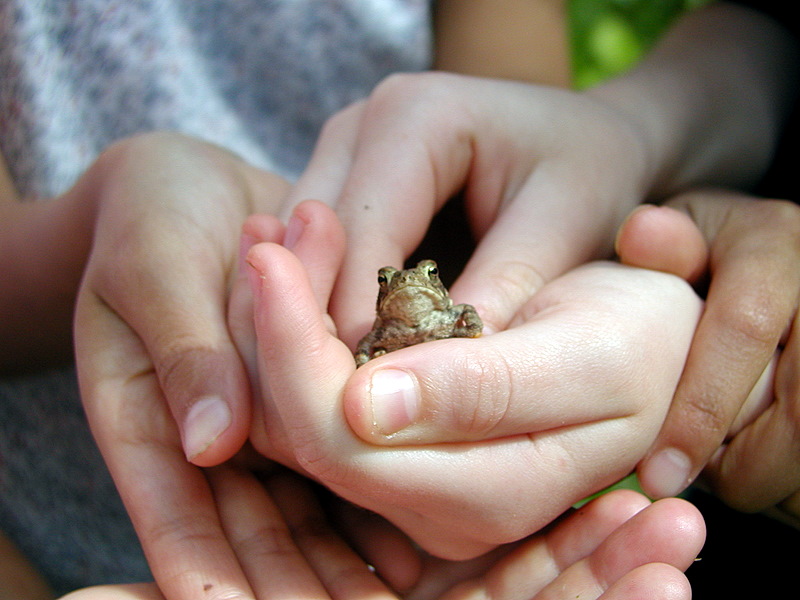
Uploaded by request of John McDaniel

Photo taken in Roxbury, NY

Children gently meeting a new friend.